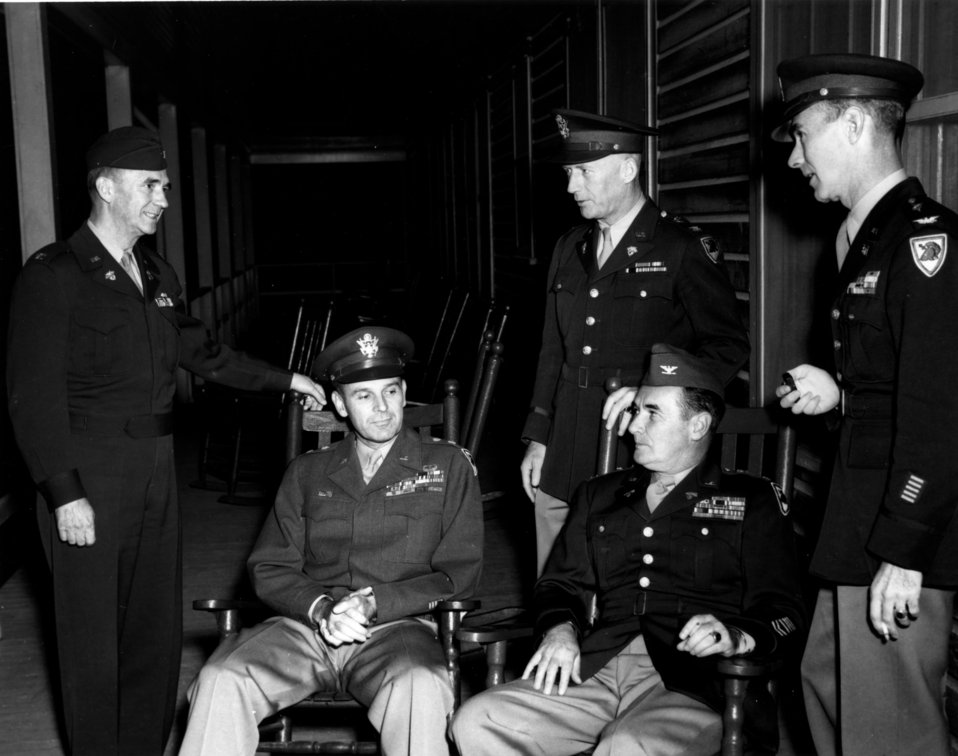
Army Activity at Oak Ridge